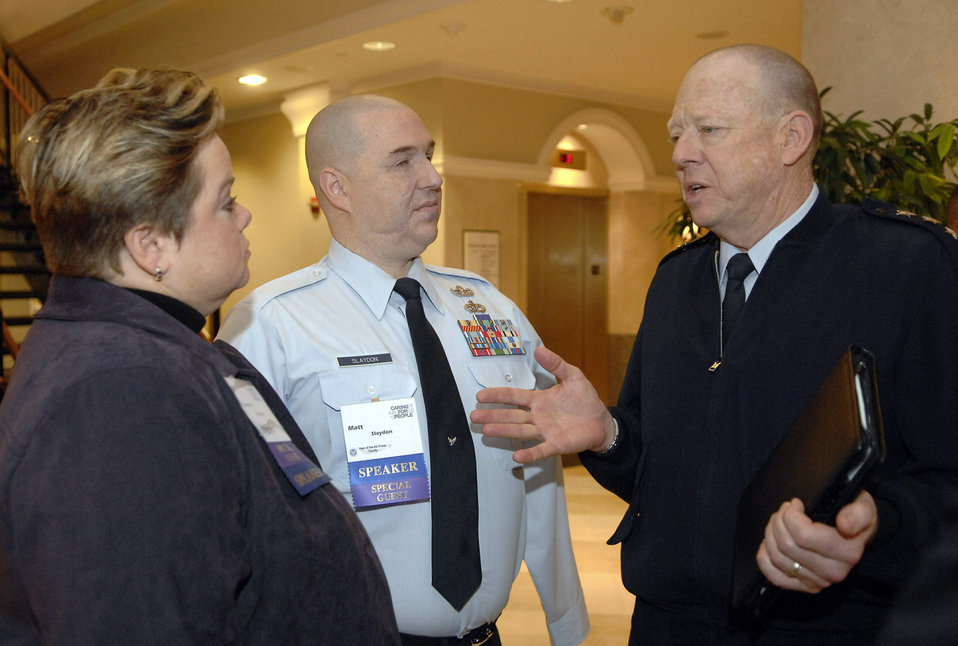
Family care forum kick starts Year of the Air Force Family

Annette Slaydon and Tech. Sgt. Matt Slaydon speak with Lt. Gen. James Roudebush, the Air Force surgeon general, April 2 during the Caring for People Forum in Arlington, Va. The first-ever forum kicked off the Year of the Air Force Family.